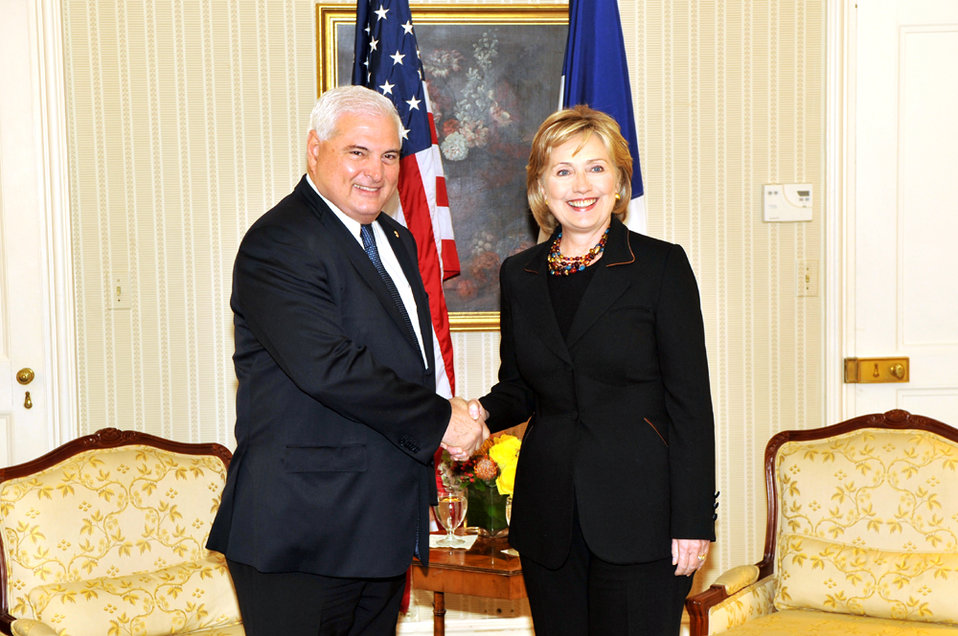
UNGA 2009: Secretary Clinton Meets With Panamanian President

U.S. Secretary of State Hillary Rodham Clinton meets with Panamanian President Ricardo Martinelli at the Waldorf Astoria hotel in New York City, New York September 26, 2009.